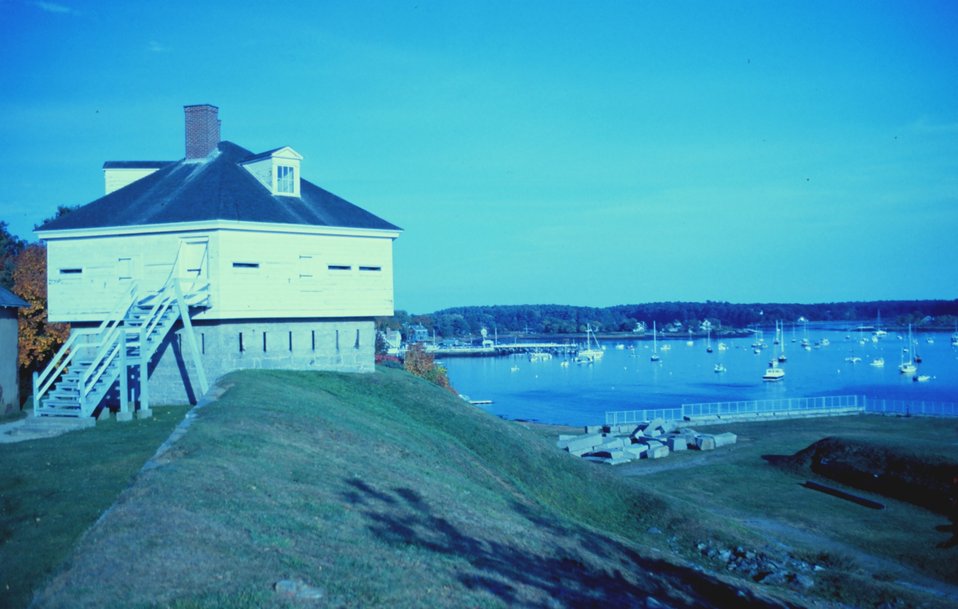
Blockhouse at Fort McClary built in 1844